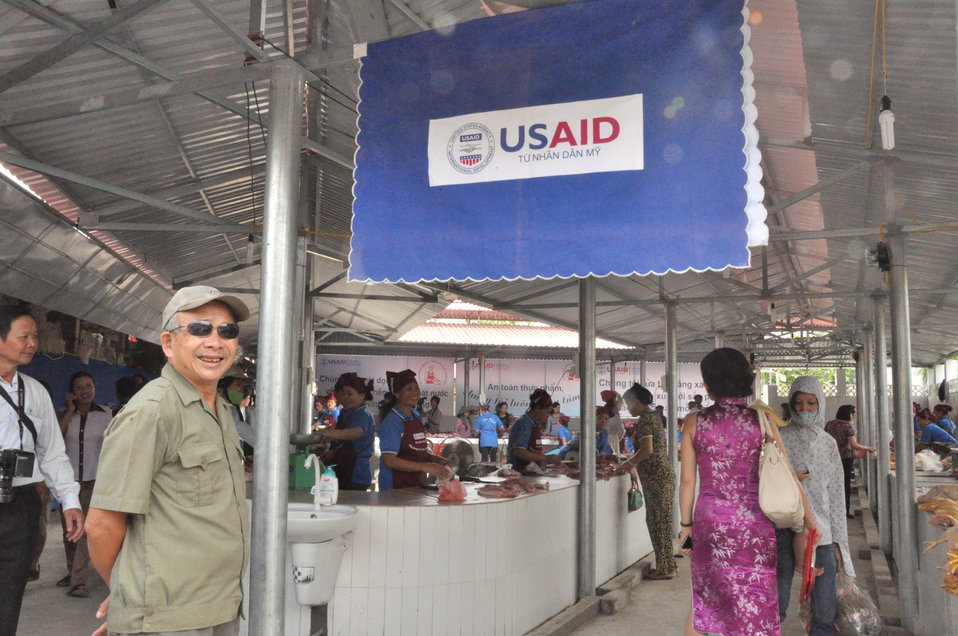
Handover Ceremony Hoa Mac Market, Ha Nam

October 26, 2012 Photo: Richard Nyberg, @USAIDVietnam